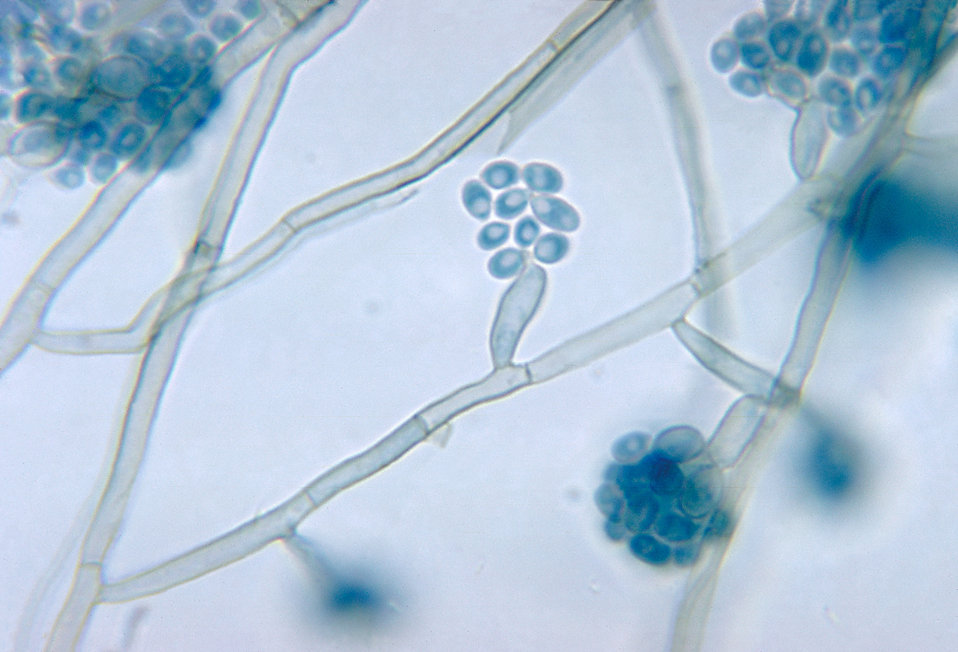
This micrograph depicts the conidia-laden conidiophores of a fungal organism of the genus Exophiala.